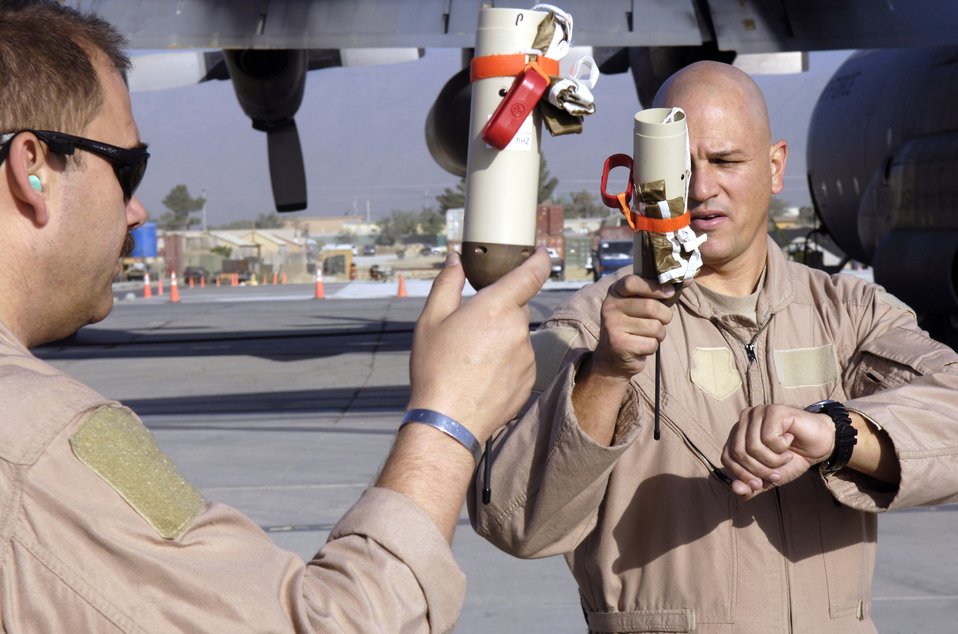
Bagram C-130s drop high-tech cargo delivery system

Master Sgt. Gordy Heinen and Tech. Sgt. Steven Hayes acquire Global Positioning Satellite signals on two dropsondes before the first operational test of the Screamer 2k Joint Precision Air Drop System Aug. 31 over Afghanistan. The dropsondes calculate wind speed and relay the information back to the aircraft, helping calculate the correct drop point. Sergeant Heinen is a loadmaster with the 774th Expeditionary Airlift Squadron. Sergeant Hayes is a loadmaster with the Air Mobility Warfare Center.